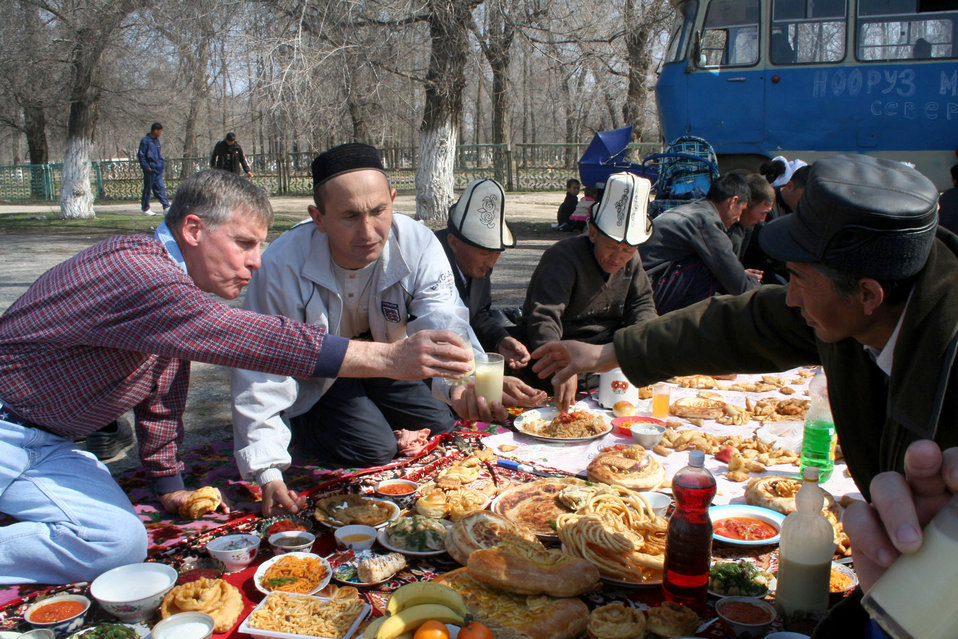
Manas AB and local community forge bonds of friendship

Col. Bill Baird shares a glass of bozo (buh-zoh) with a family at a celebration in Jani Jer, a village outside of Manas Air Base, Kyrgyzstan, March 22, 2006, after the family spontaneously invited him and other wing leaders to join their meal. The wing leaders were invited by Mayor Batyrlan Kulov to join his village in celebrating Nooruz, a New Year celebration in some Muslim traditions, after Colonel Baird visited the village during a new outreach initiative in February. The colonel is commander of the 376th Expeditionary Mission Support Group.